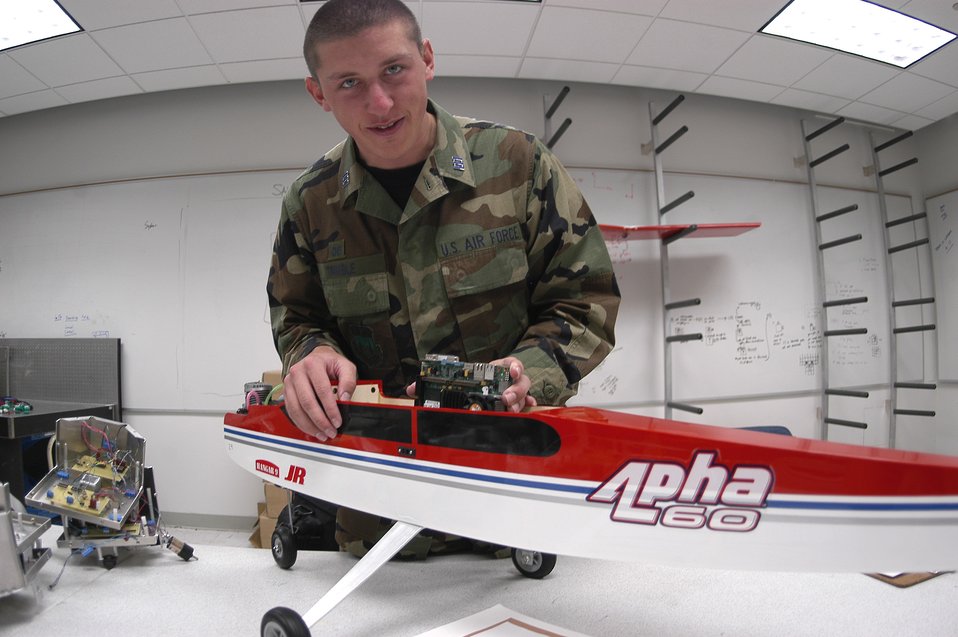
UAVs

U.S. AIR FORCE ACADEMY, Colo. (AFPN) -- Cadet 1st Class James Trimble demonstrates how the network component he helped design will fit inside a UAV. An in-air network will allow multiple UAVs to communicate with each other as they accomplish tasks in groups.